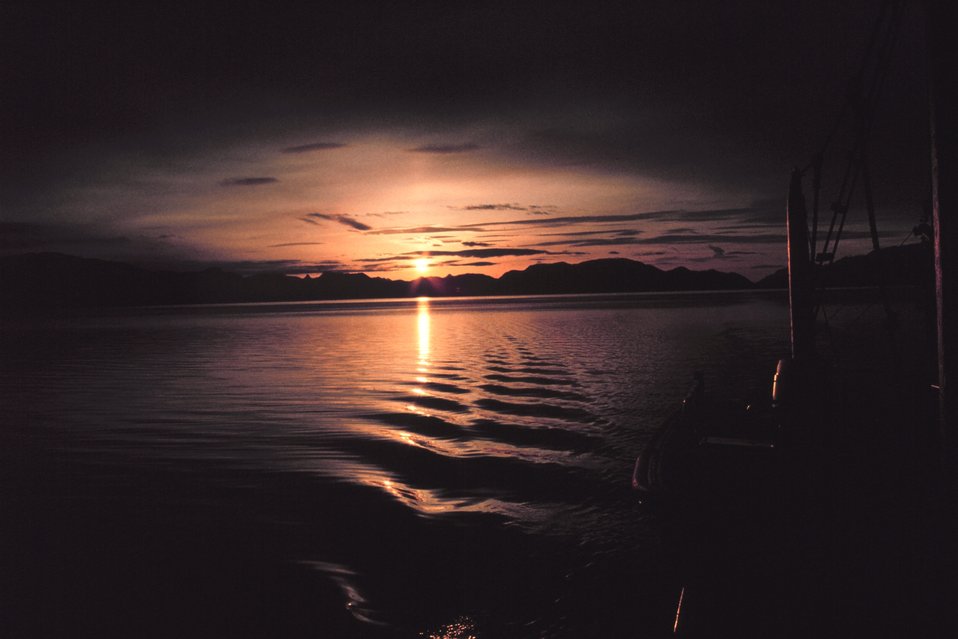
Sunset in Icy Straits area